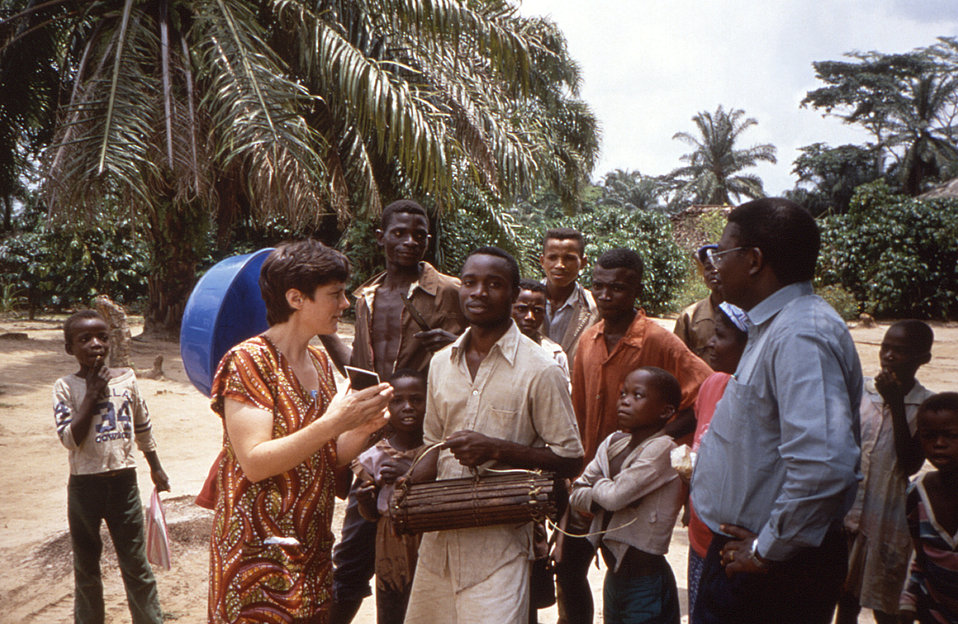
This image was created during an investigation into an outbreak of monkeypox, which took place in the Democratic Republic of the Congo (DRC), 1996 to 1997, formerly Zaire. Pictured here was American zoologist, Delphi Messinger, and Dr. L.V. Okito, as they were in the process of buying a squirrel from one of the local villagers.